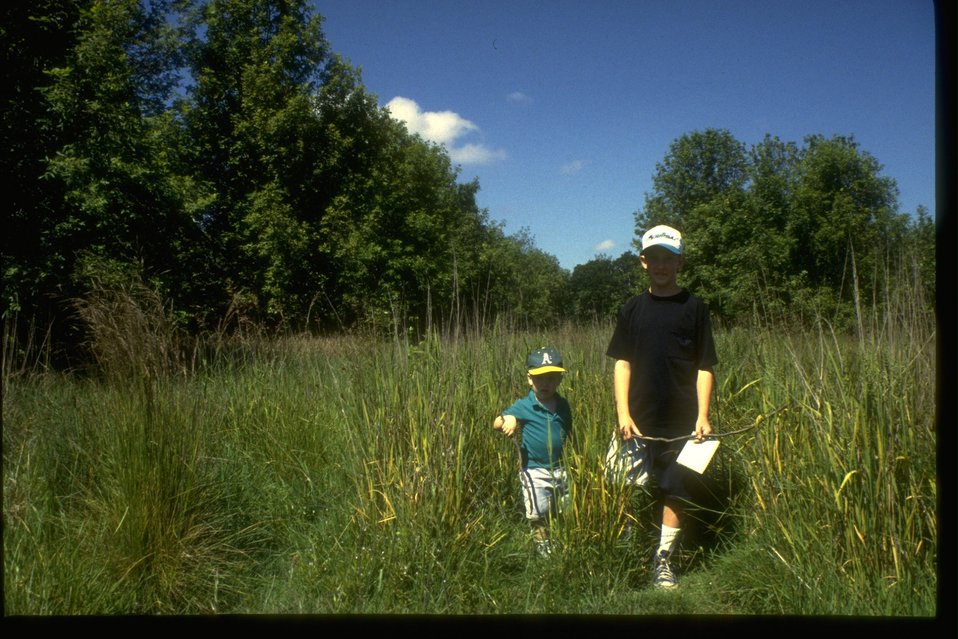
Children explore the West Eugene Wetlands Project Site.